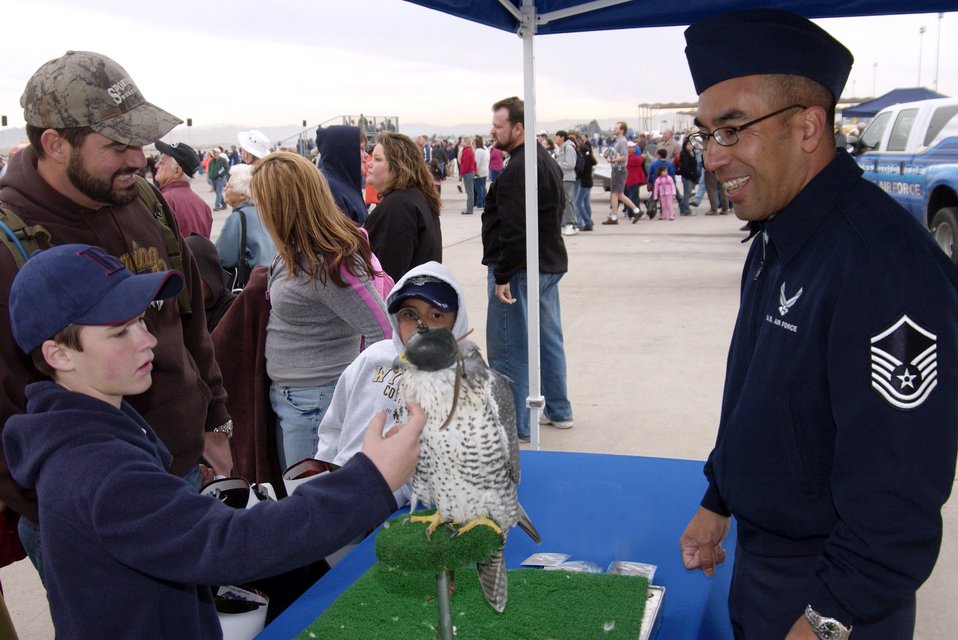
Aviation Nation at Nellis

Master Sgt. Gino Mattorano of the U.S. Air Force Academy shows a young air show spectator a Falcon mascot named